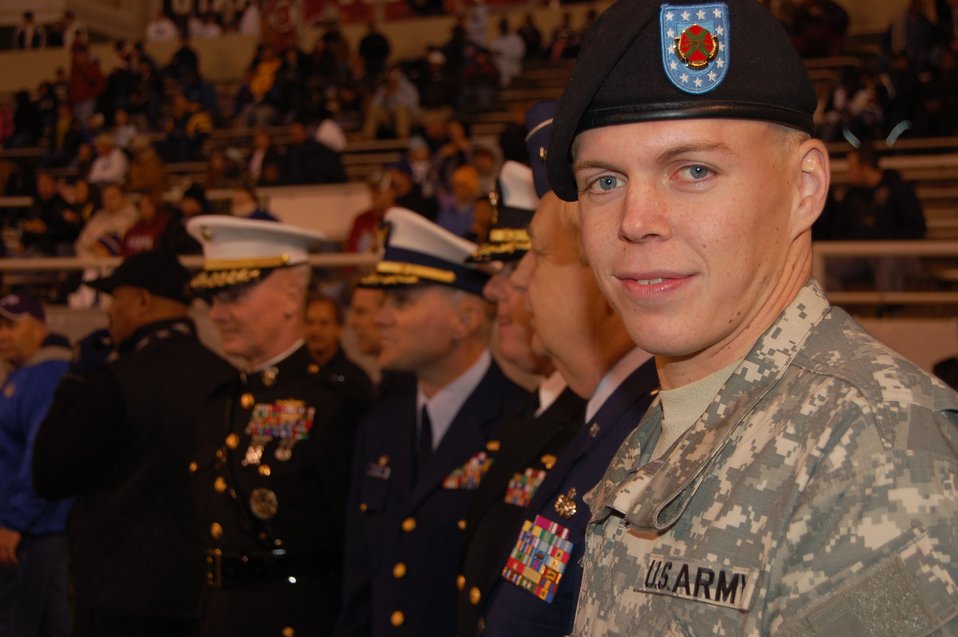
Bell Helicopter Armed Forces Bowl pays tribute to servicemembers

The junior-ranking military member of the Bell Helicopter Armed Forces Bowl Coin Toss Ceremony, Private 1st Class Dennis Bowsher, stands in line with other ceremony officials before the start of the game. Private Bowsher is the 2005 National Pentathlete Champion and member of the Army World Class Athlete Program. He is a potential 2008 Olympic participant, and is a native of the Dallas-Fort Worth area.